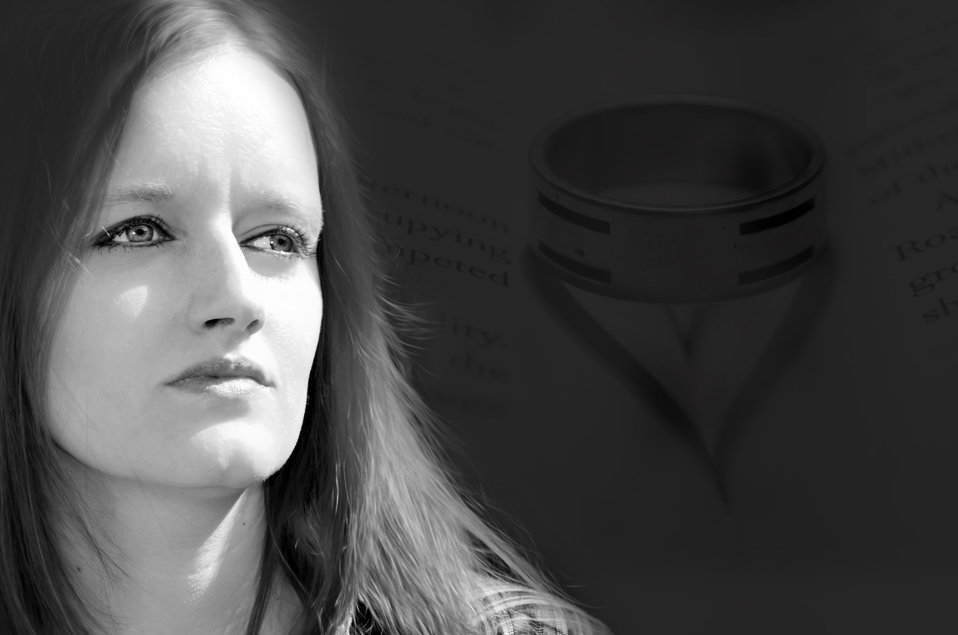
Woman and love.